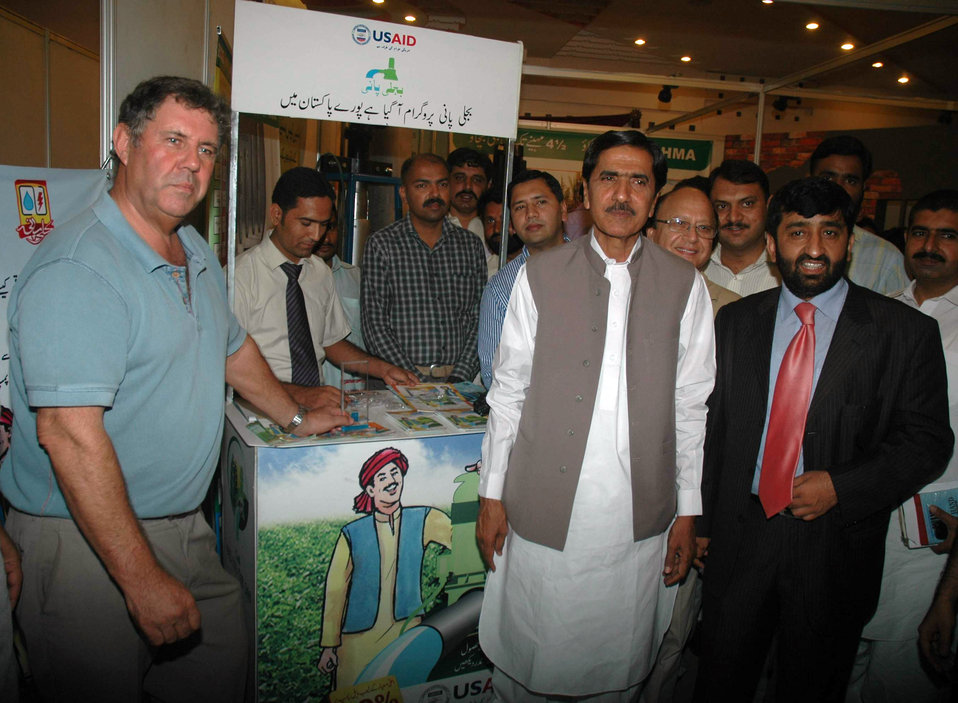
Jang Agriculture Expo

Multan, June 4, 2011 - Malik Ahmad Ali Aulakh , Punjab Minister for Agriculture visits USAID’s Tubewell Efficiency Improvement Program booth at the Jang Agriculture Expo.